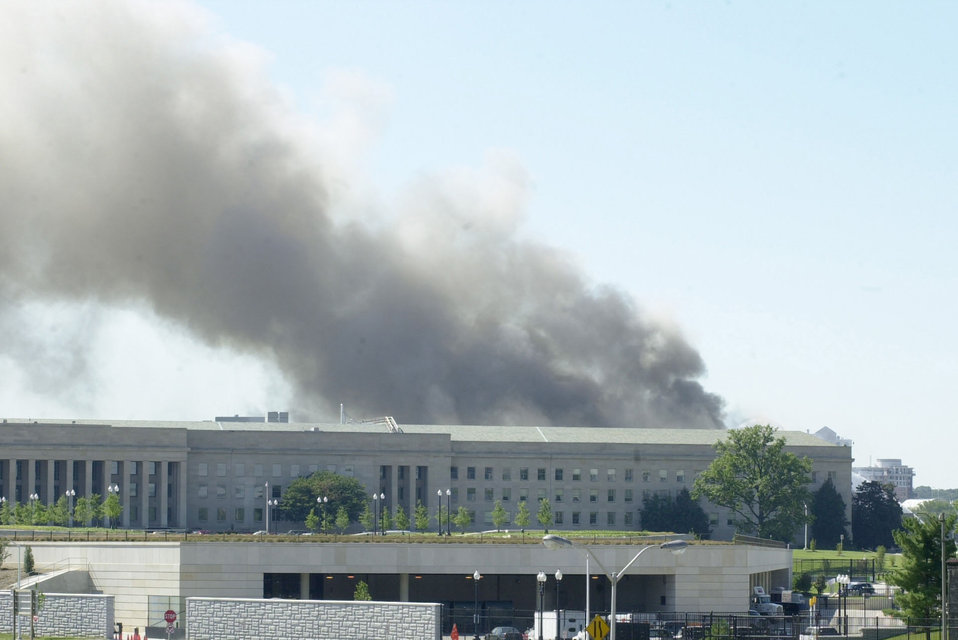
Pentagon

Smoke billows from the Pentagon after a highjacked commercial jetliner crashed into the building on Sept 11, 2001. The Pentagon crash followed an attack on the twin towers of the World Trade Center in New York City in one of the worst terrorist actions in history.